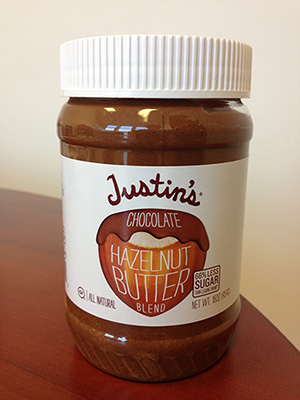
RECALLED - Maple almond butter; Chocolate hazelnut butter

August 16, 2013 – Product Recall – Voluntary Recall of Limited Lots of Maple Almond Butter Jars and Chocolate Hazelnut Butter Jars
.